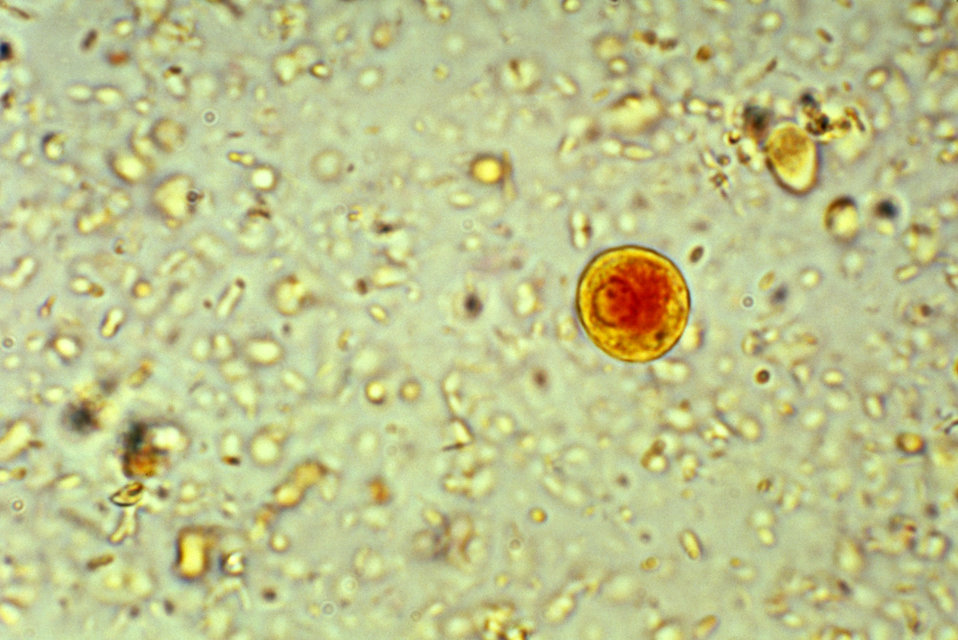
This photomicrograph depicts a mononucleated cyst of an Entamoeba histolytica amoebic parasite, displaying a prominent glycogen mass.